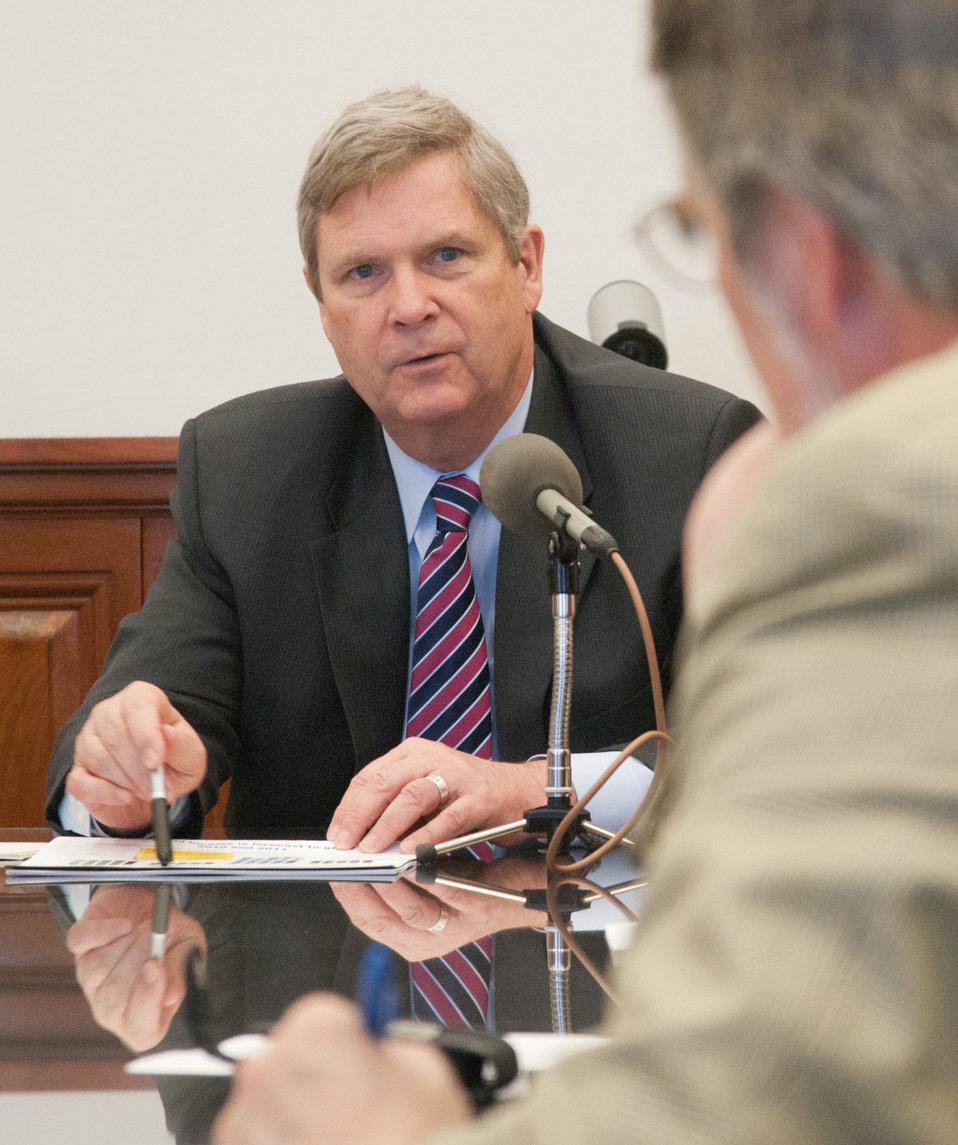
Agriculture Secretary Tom Vilsack responds to a question from Reuters journalist Chuck Abbott during a question and answer session after a briefing to news media on how the U.S. Department of Agriculture actions will support President Barrack Obama’s proposed budget, Monday, February 14, 2011, in Washington, D.C. In an effort to promote good government and streamline agency operations in a host of programs, programs have been selected to be reduced or terminated. Secretary Vilsack said, “In the end we must cut to grow. And we are working to do it as responsibly as possible for American Agriculture and the American people.”